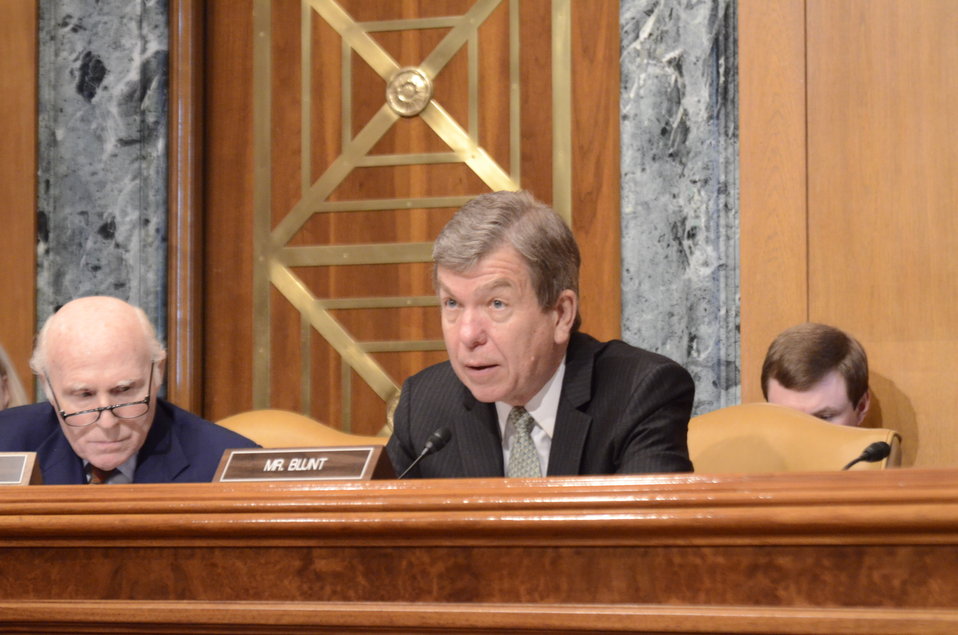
Senate Agriculture Appropriations Committee ranking member Senator Roy Blunt (MI) questions Agriculture Secretary Tom Vilsack about the U.S. Department of Agriculture’s (USDA) fiscal year 2013 budget at the Dirksen Senate Office Building in Washington, D.C., on Thursday, March 29, 2012.